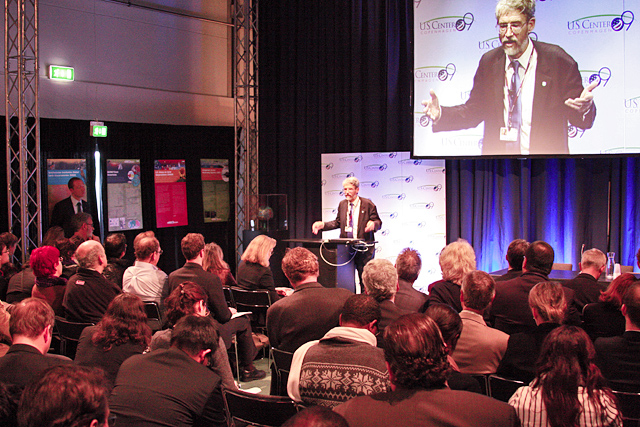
'The Science of Climate Change' Presentation at COP-15

Dr. John P. Holdren, Assistant to the President for Science and Technology and Director of the Office of Science and Technology Policy gives a presentation on 'The Science of Climate Change' at the U.S. Center during COP15 (Conference of the Parties to the UN Framework Convention on Climate Change) in Copenhagen, Denmark December 16, 2009.